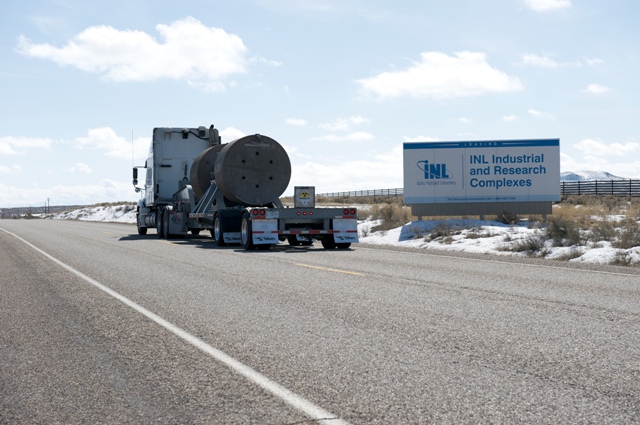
Recovery Act Accelerates Idaho Site Cleanup, Leads to Numerous Accomplishments

First ARRA funded RH-TRU shipment to WIPP.